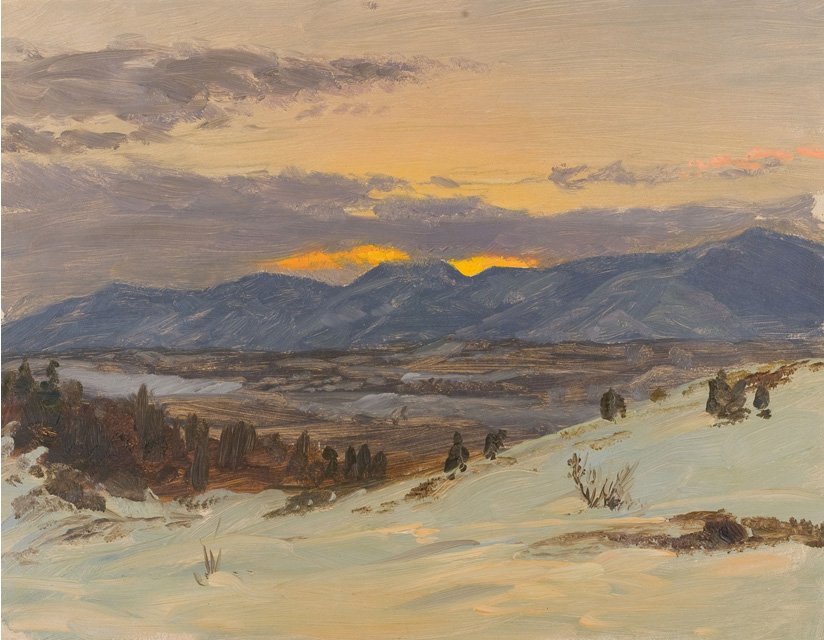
'Winter Twilight from Olana' by Frederic Edwin Church, about 1871-2